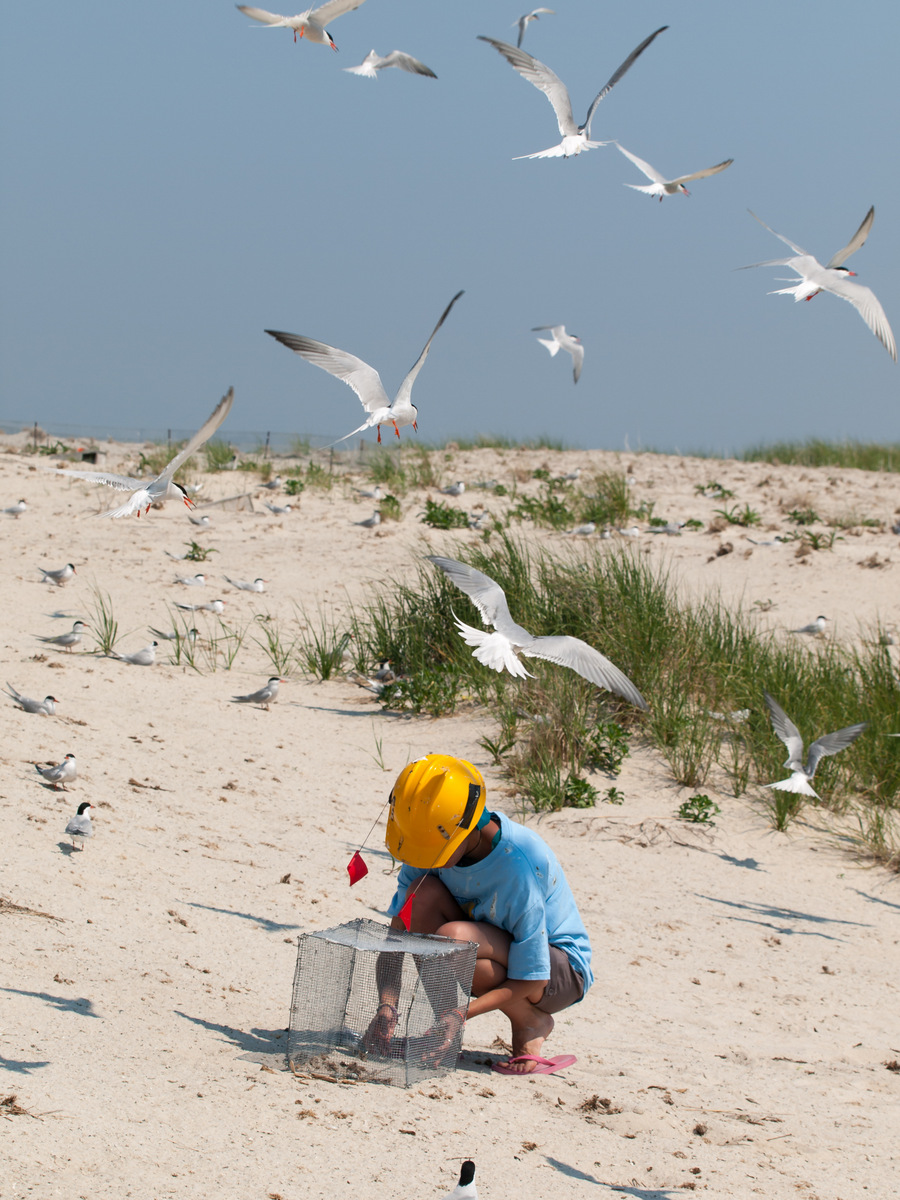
Checking Tern Exclosures

Biologist checking tern exclosures at Monomoy National Wildlife Refuge.